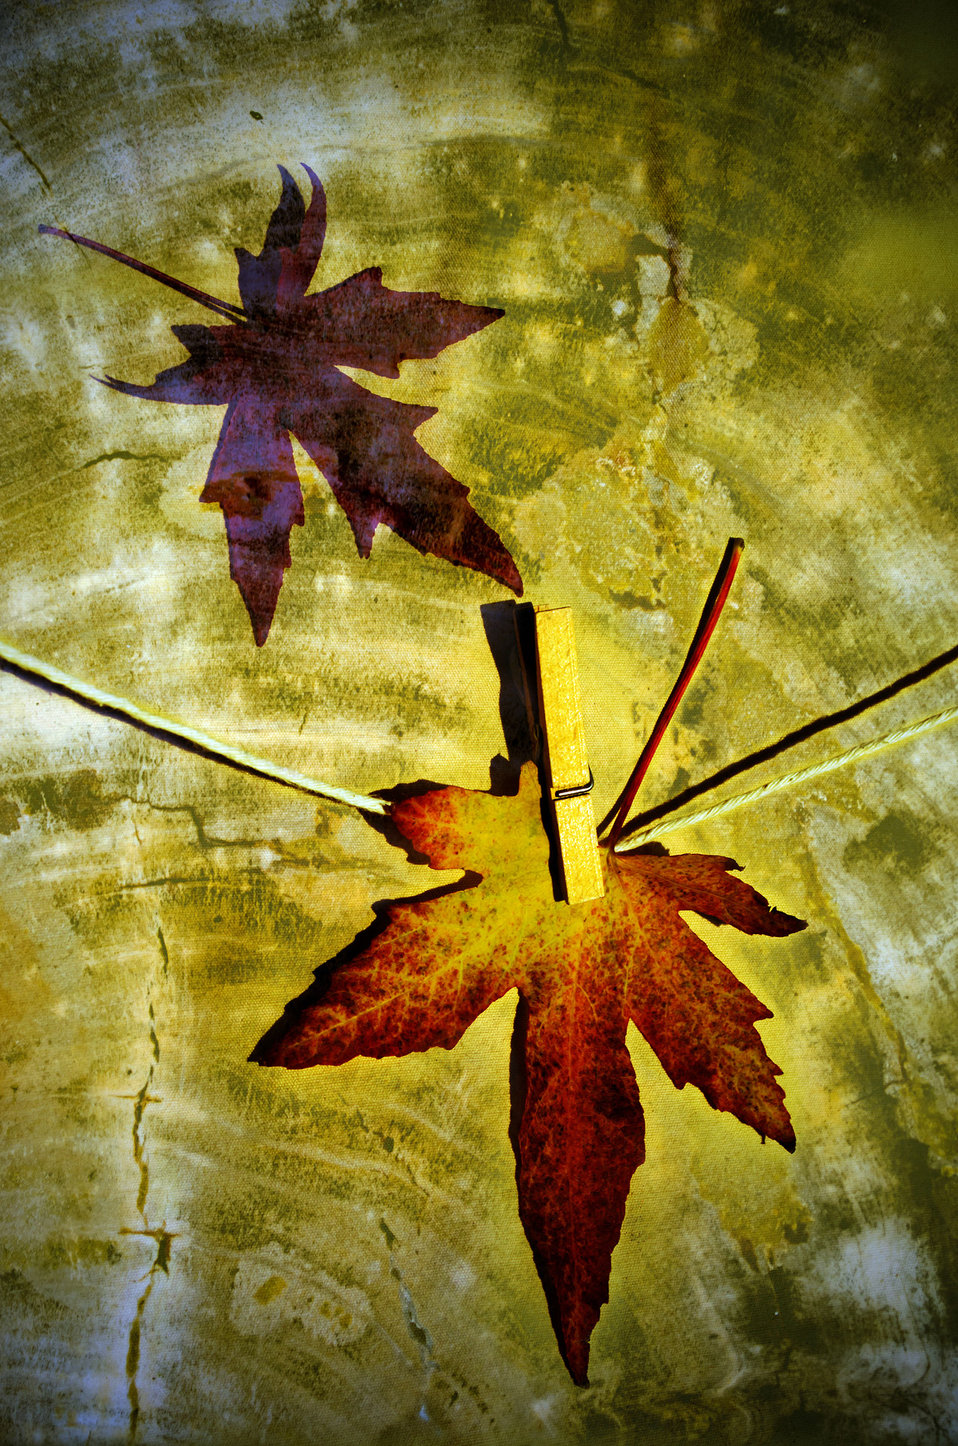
Leaves - background.